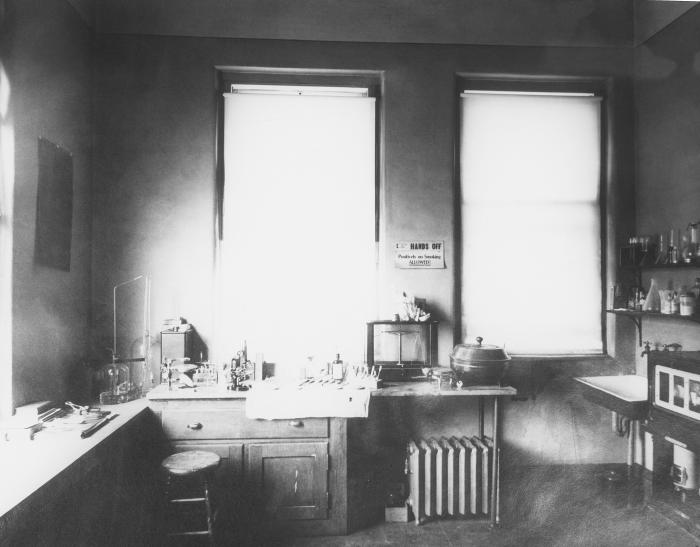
This historic 1916 photograph depicted an interior view of the Chisholm, Minnesota, Water and Light Company's water filtration plant, which was used to purify the town's potable water supply. An exterior view was pictured in PHIL image #8481. This particular scene revealed aspects of the facility's laboratory, where water sample analyses may have been performed.